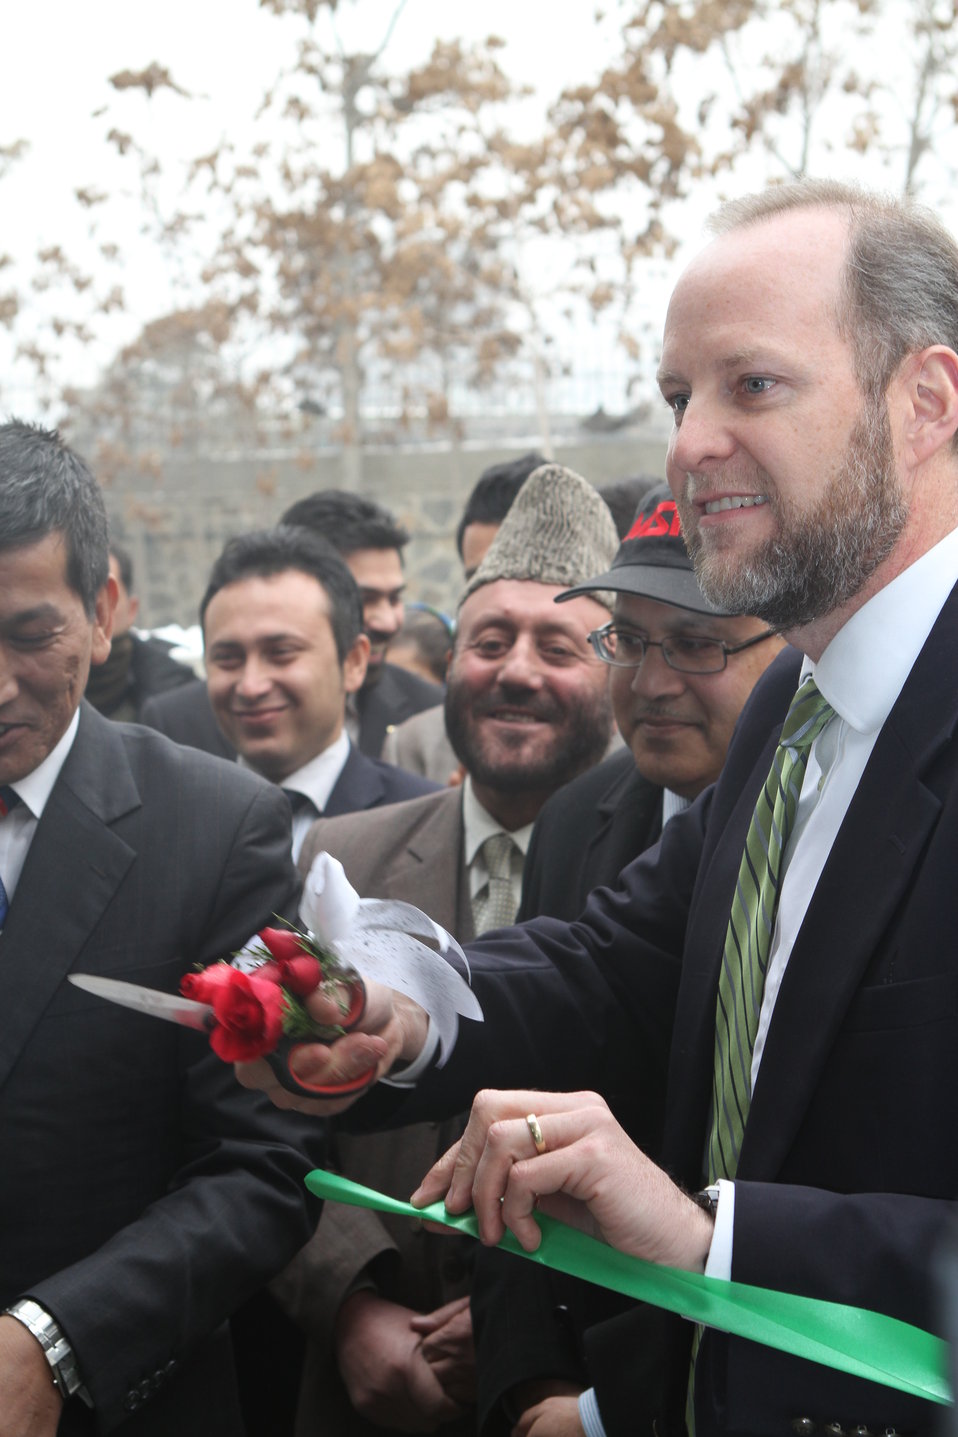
Ribbon Cutting at MFA

US Embassy Deputy Political Counselor Geoff Odlum opens the MFA Training Center with a ribbon cutting.